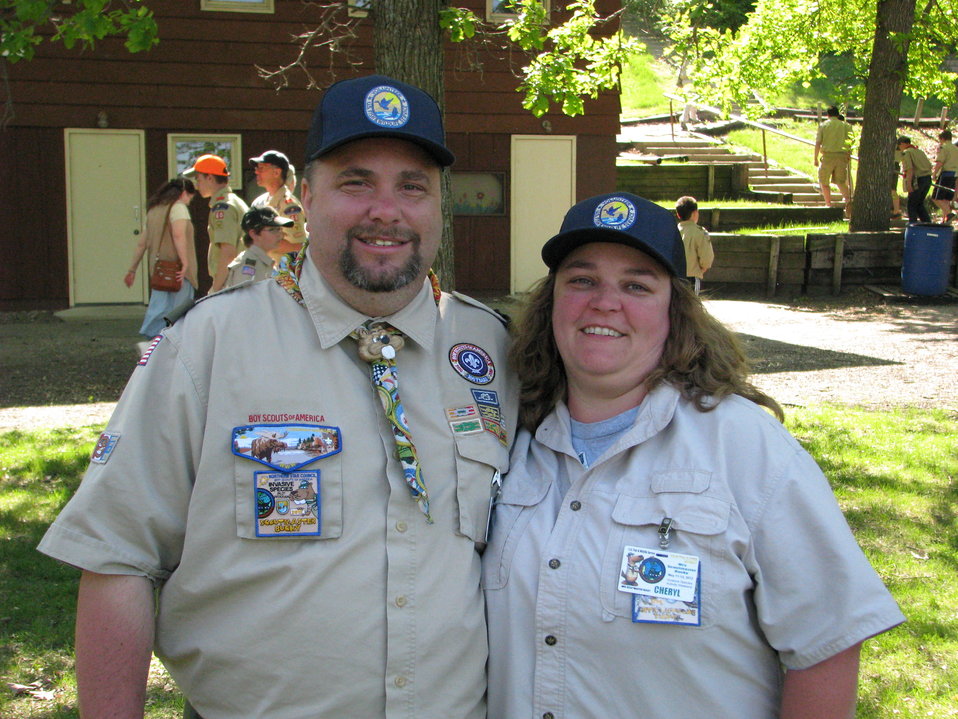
Mr. and Mrs. Scoutmaster Bucky volunteer with the USFWS and helped lead the effort to remove invasive species with the Boy Scouts.